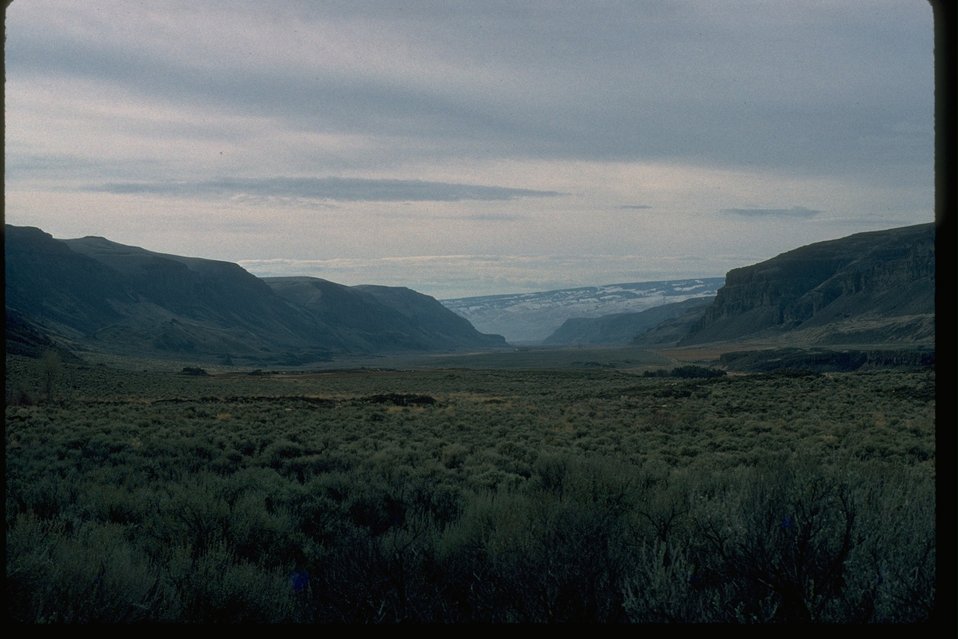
Hungate Trail in Moses Coulee, Grant County, Washington.